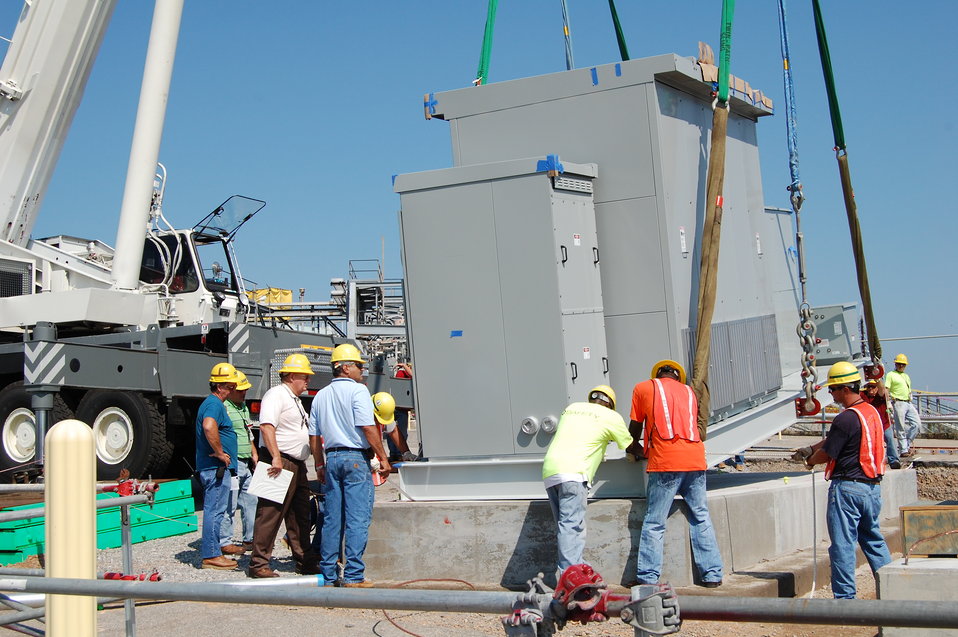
SRR Substation Placement

Savannah River Remediation employees complete the placement of an electrical substation that will be used in tank closure activities at SRS. Approximately $400,000 from the Recovery Act was used to purchase the substation, which feeds into an electrical equipment skid that provides power to mixer and transfer pumps used in tank closure activities and for other infrastructure on the two tank farms at SRS.